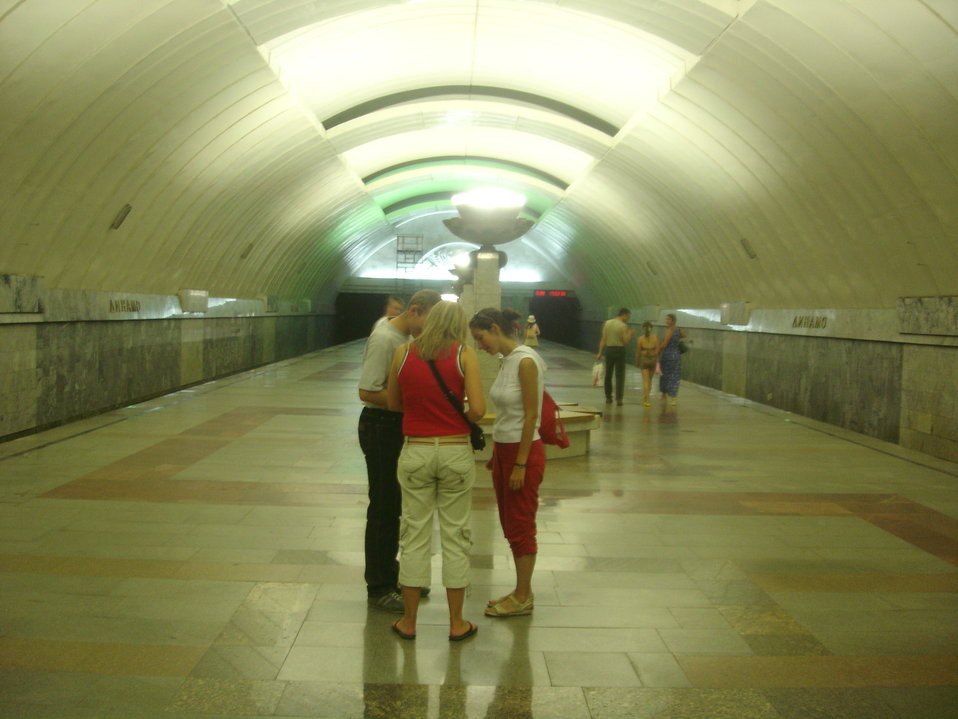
Čeština: Stanice Dinamo v Jekatěrinburském metru. People gather on the platform at Dinamo, one of the stations in the Yekaterinburg Metro system.